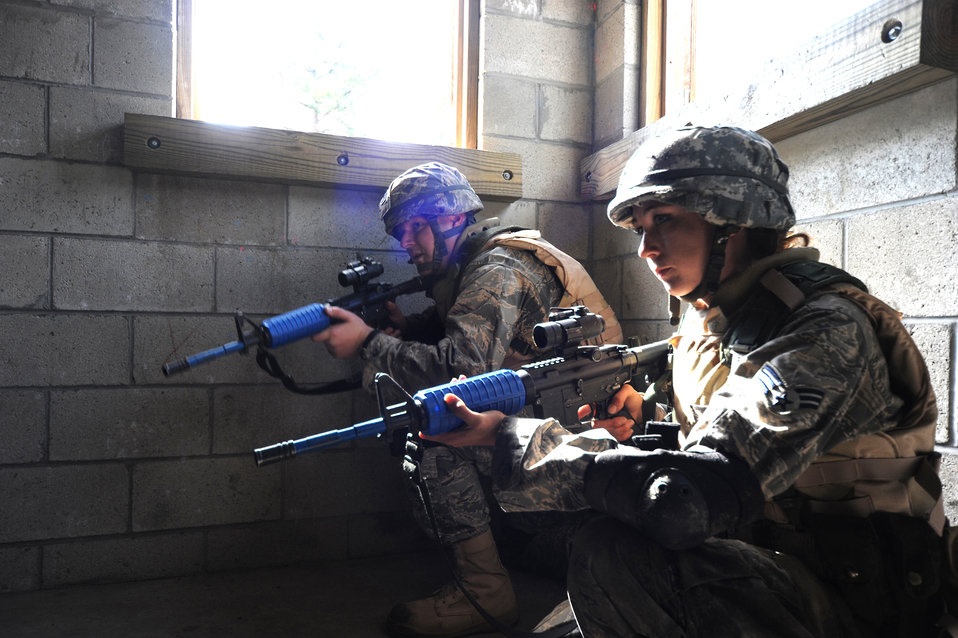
Learning the rules of engagement

Students partcipate in contingency skills basic training during Oct. 1 at Fort Dix, N.J. Air Force legal career field members learned rules of use of force, engagement and expeditionary basics for deployments. The training is held for three days prior to them attending the Advanced Contingency Skills Training Course taught by the Air Force Expeditionary Center's 421st Combat Training Squadron on Fort Dix.